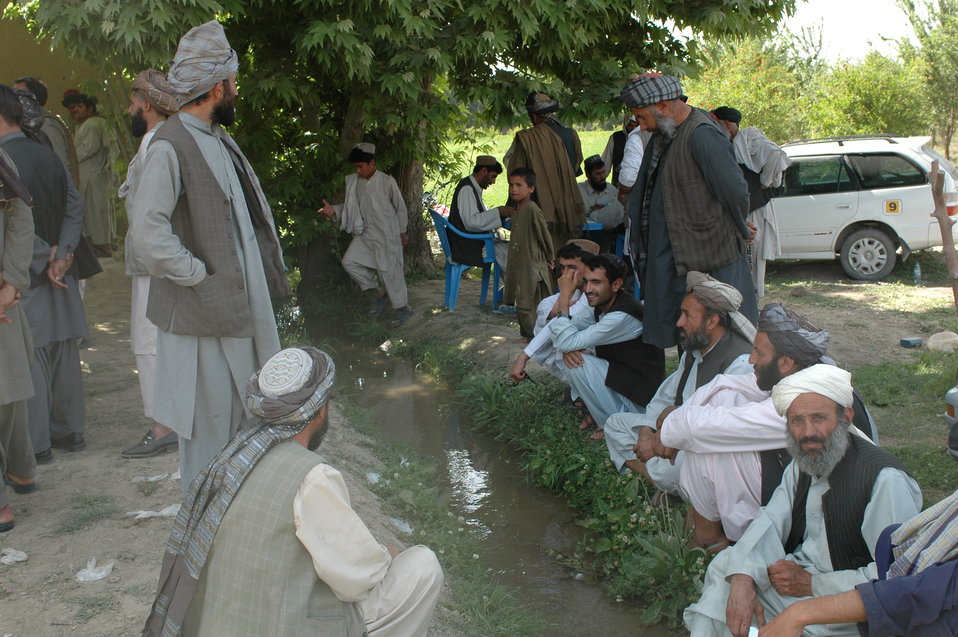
Dr Shah Visits Argandab April 10, 2010